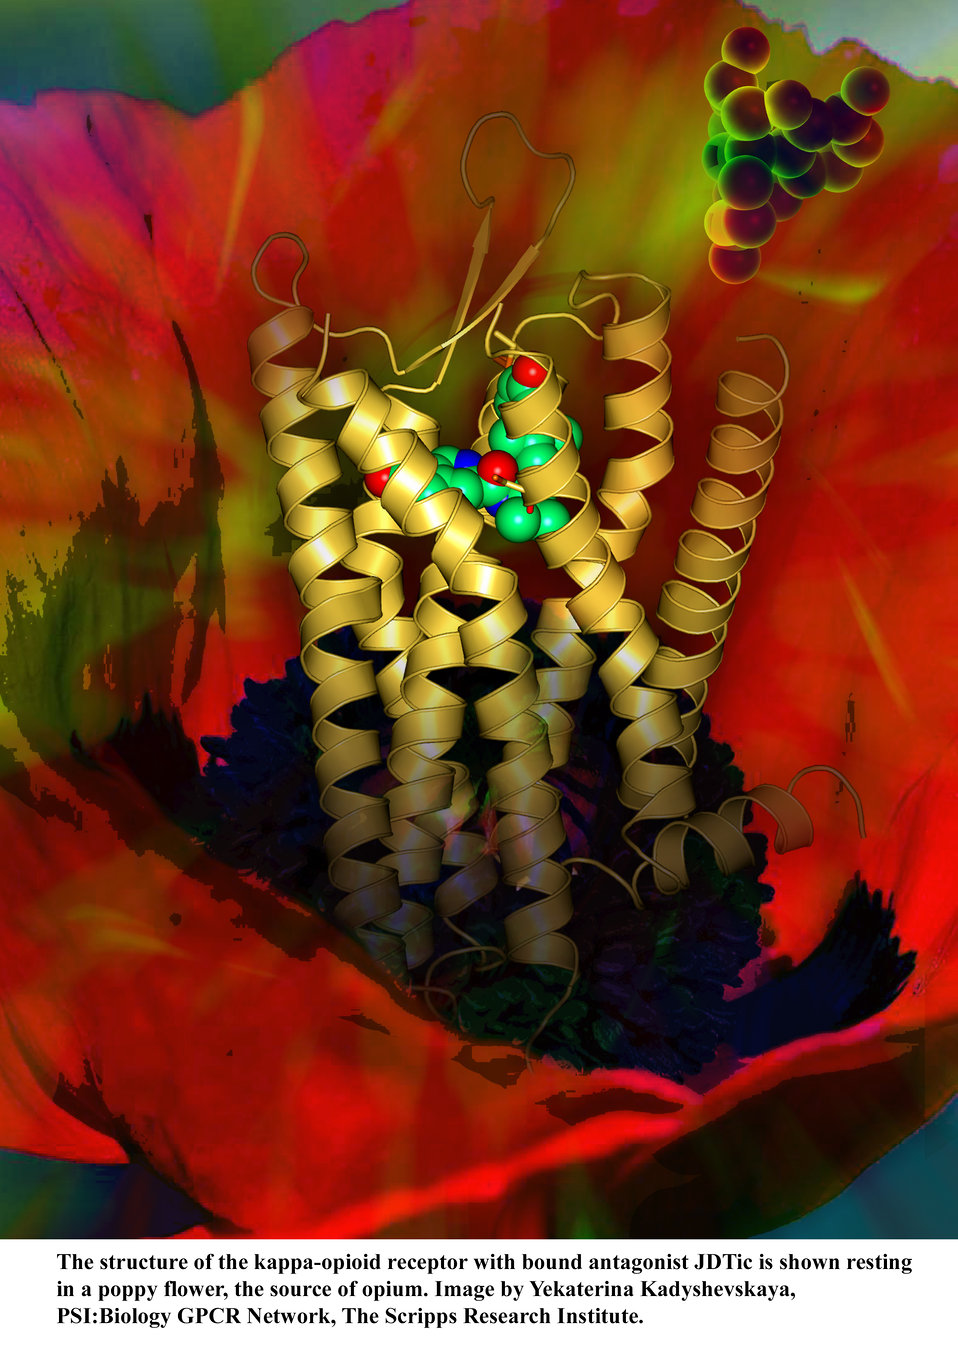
kappa JDTic

The structure of the kappa-opioid receptor with bound antagonist JDTic is shown resting in a poppy flower, the source of opium. Image by Yekaterina Kadyshevskaya, PSI:Biology GPCR Network, The Scripps Research Institute.